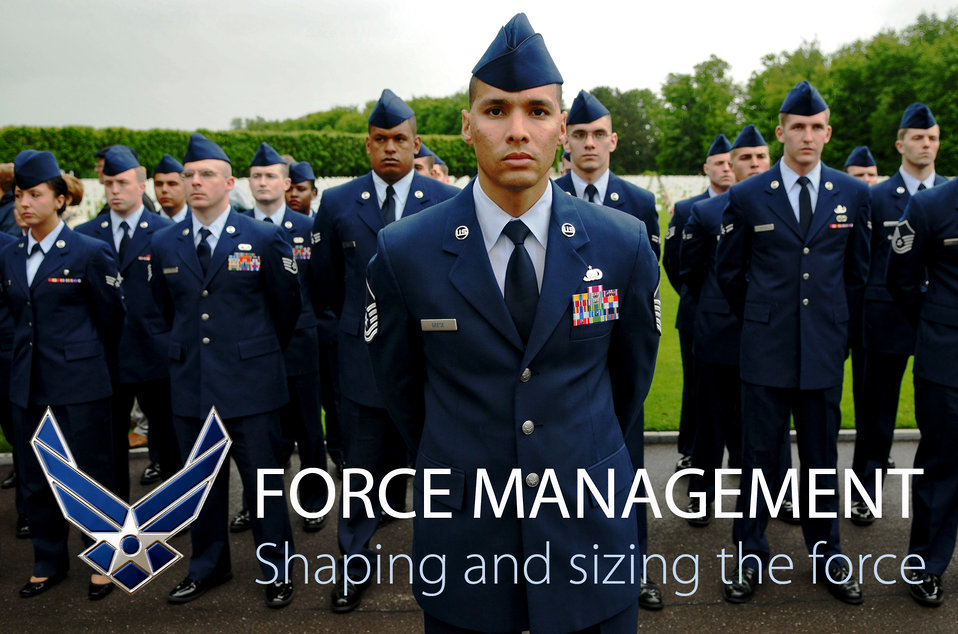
Force Management